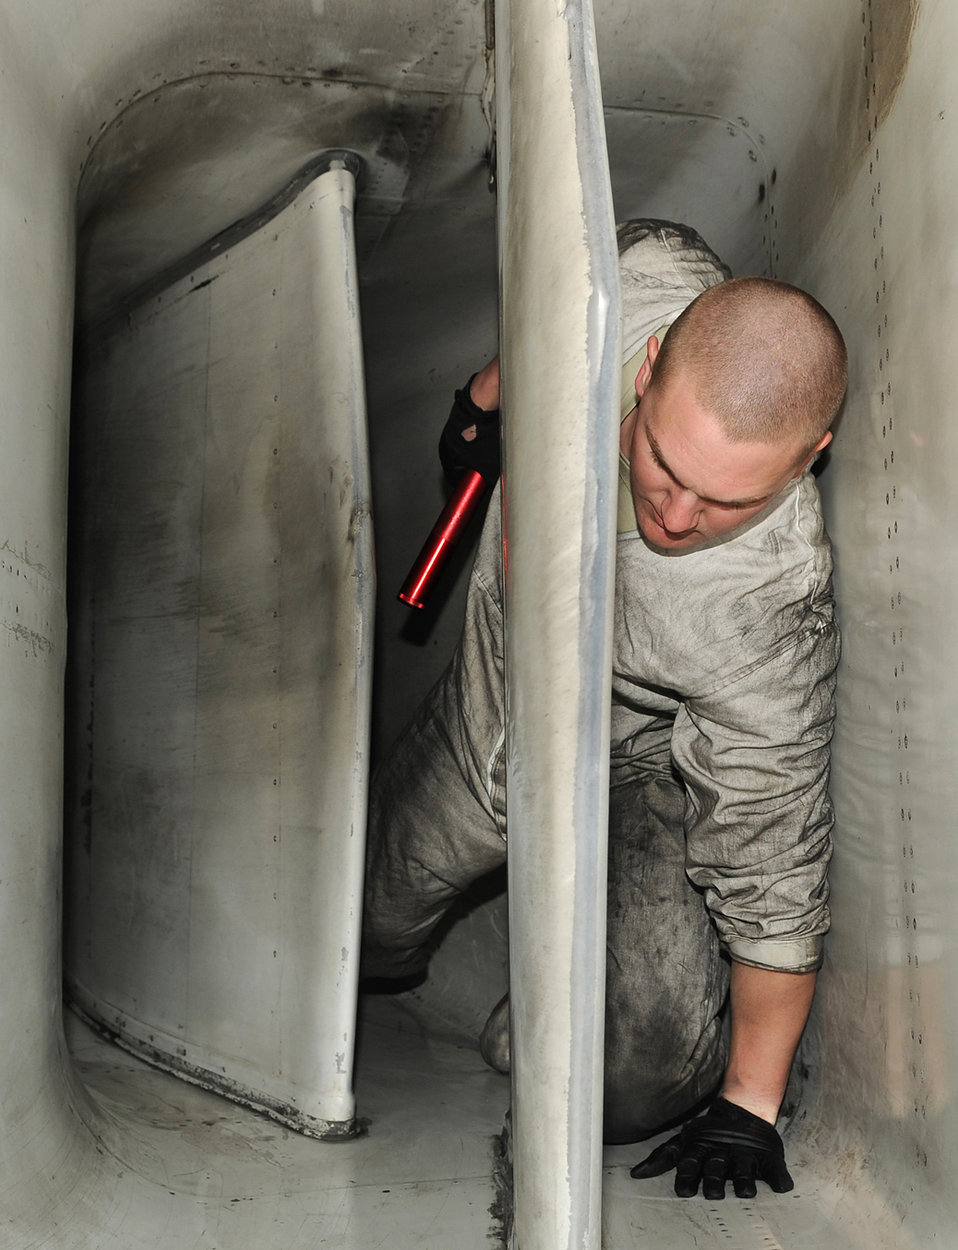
Red Flag 11-2

Senior Airman Jeffery Wood crawls from the air intake of a B-1 Lancer after performing a post-flight engine inlet inspection Jan. 26, 2011, at Nellis Air Force Base, Nev. Airmen Wood is deployed in support of Red Flag 11-2, a combined exercise that provides a realistic combat training environment to the U.S. and its allies. Airman Wood is a 28th Aircraft Maintenance Squadron crew chief.